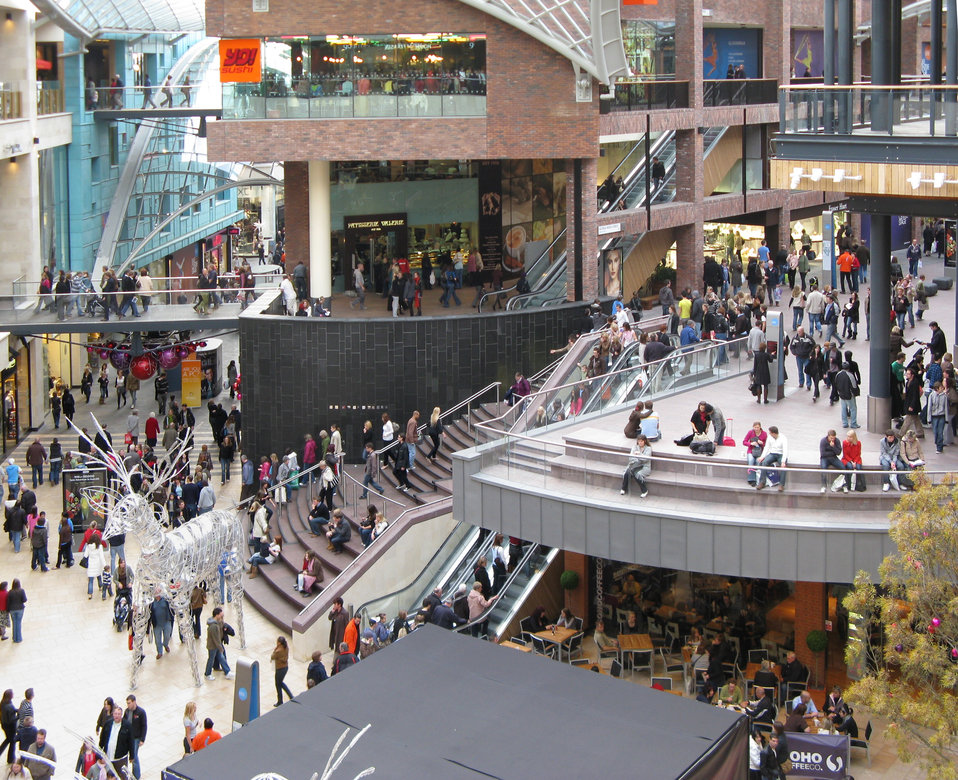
The central “square” of Cabot Circus shopping centre in Bristol, England.
There are three (traffic free and undercover) shopping streets, one is seen on the left, one is seen in the middle (at a higher level) and the third is off-picture to the right.
Two pedestrian bridges across the streets are seen on the left.
The huge reindeer is part of the Christmas decorations (get the scale from the two people walking beneath it).